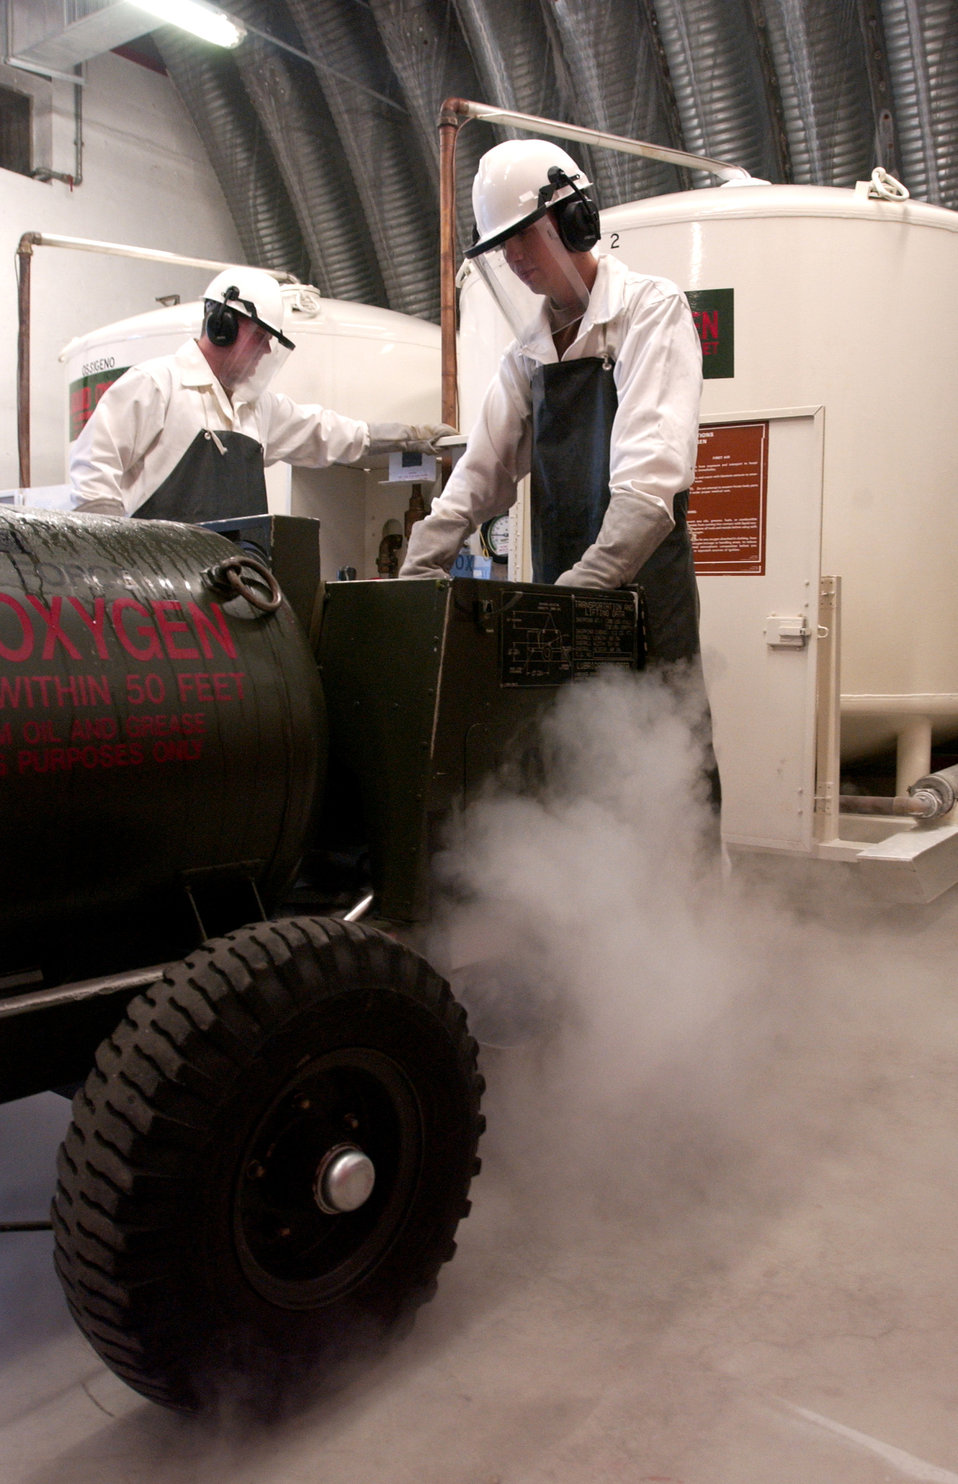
Don't spill

AVIANO AIR BASE, Italy -- Airman 1st Class Allan Selman and Senior Airman Travis Miller service a liquid oxygen cart here Oct. 5. Both Airmen are cryogenics technicians assigned with the 31st Logistics Readiness Squadron.